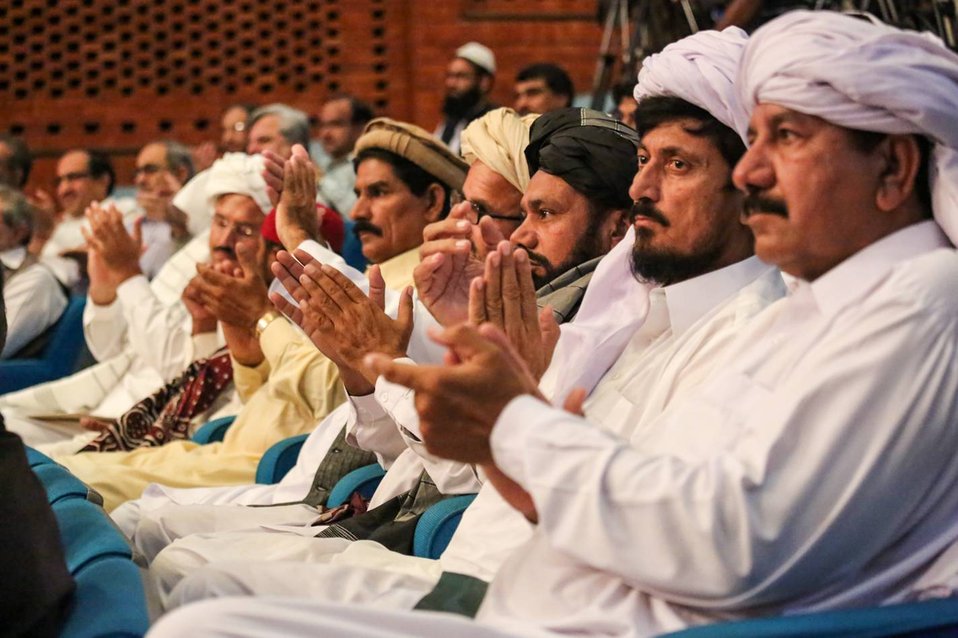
Islamabad, September 12, 2012 - Project Launch Ceremony of Waran Canal Irrigation System